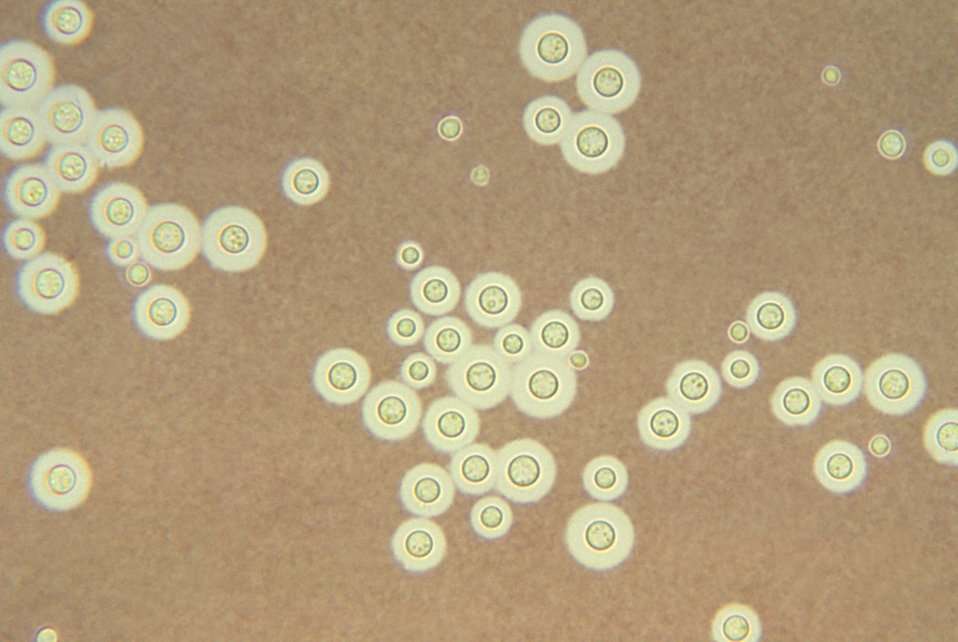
This photomicrograph depicts Cryptococcus neoformans using a light India ink staining preparation.